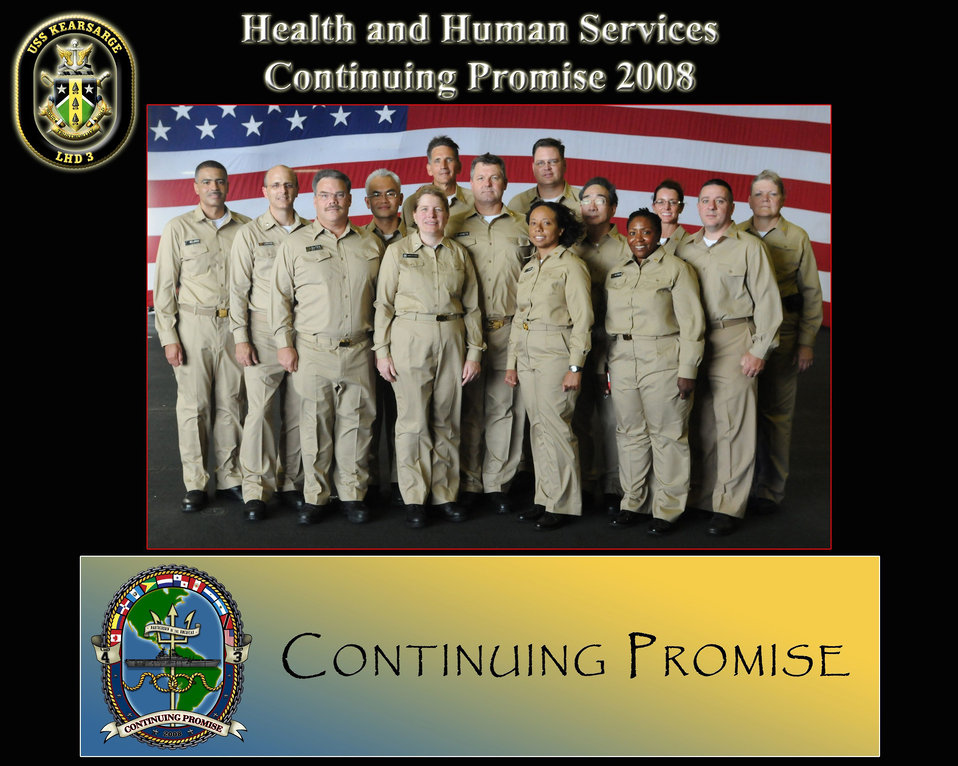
Photographed by a US Navy photographer, this image depicts United States Public Health Service (USPHS) officers who had been brought together as a team deployed on the USS Kearsarge (LHD 3) during Operation Continuing Promise (CP), 2008.